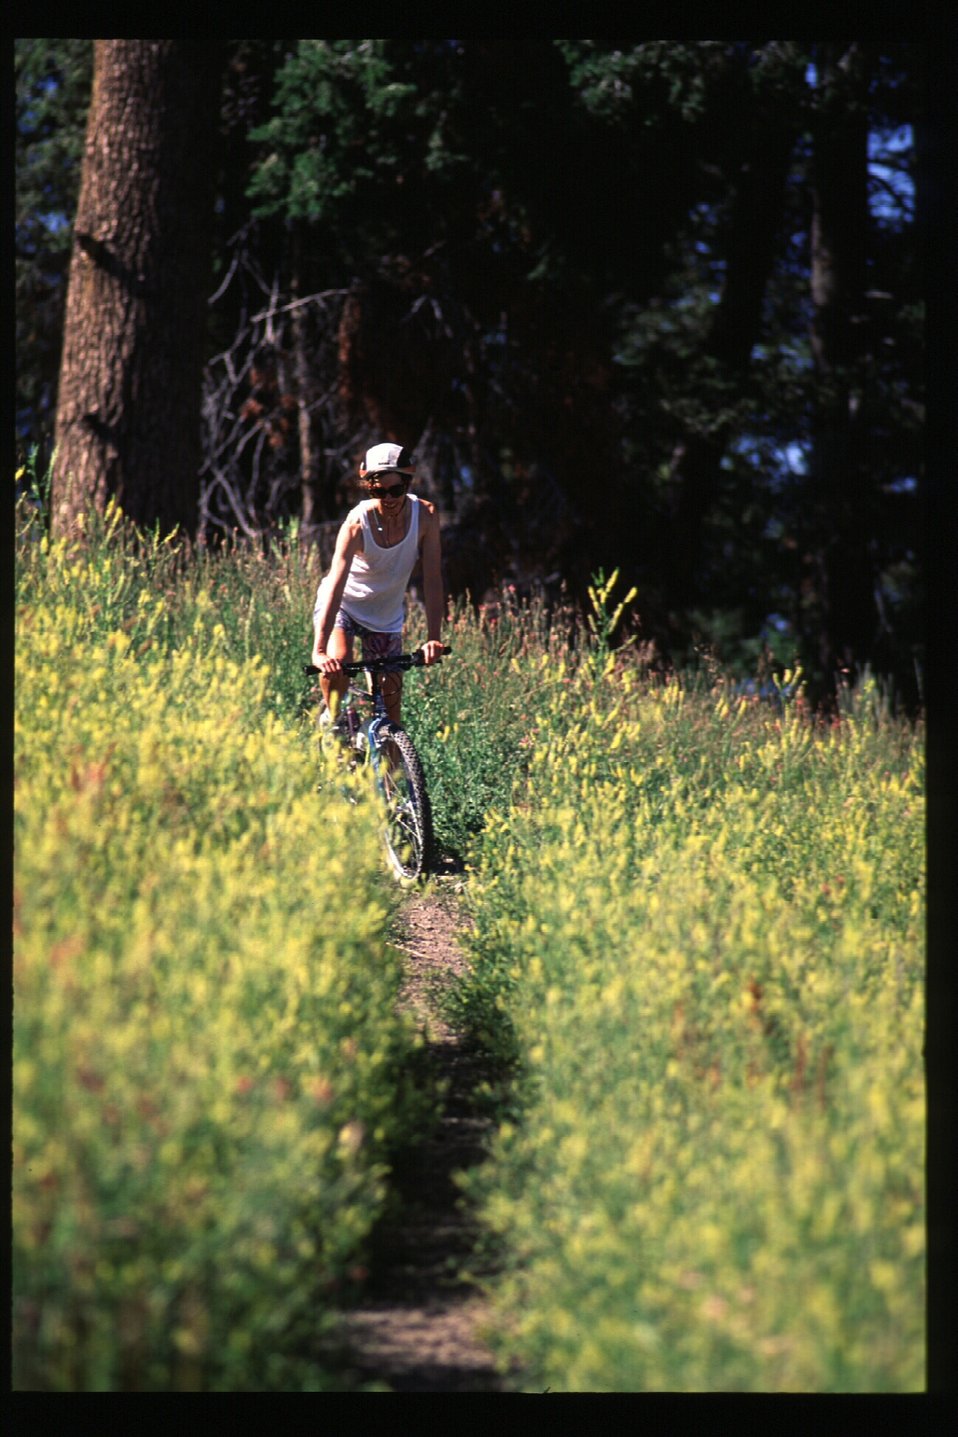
Recreation Scenic Biker Shoshone Field Office USRD Upper Snake River District